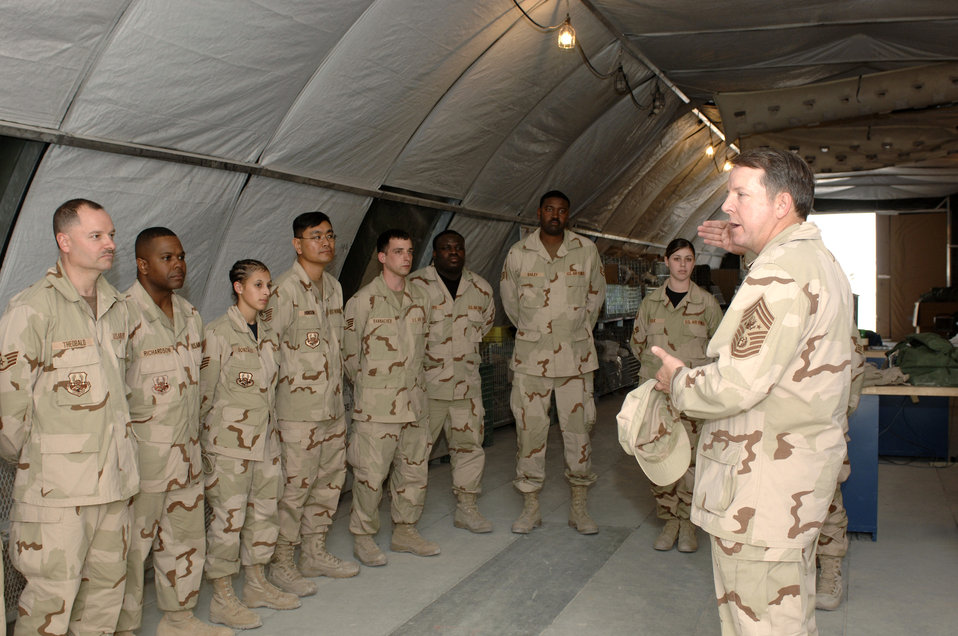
Leaders address deployments, total force concept

Chief Master Sergeant of the Air Force Rodney J. McKinley speaks to members of the 379th Expeditionary Logistics Readiness Squadron Feb. 5 in Southwest Asia. Chief McKinley spoke to Airmen about changes in the Air Force that will be implemented in upcoming months.